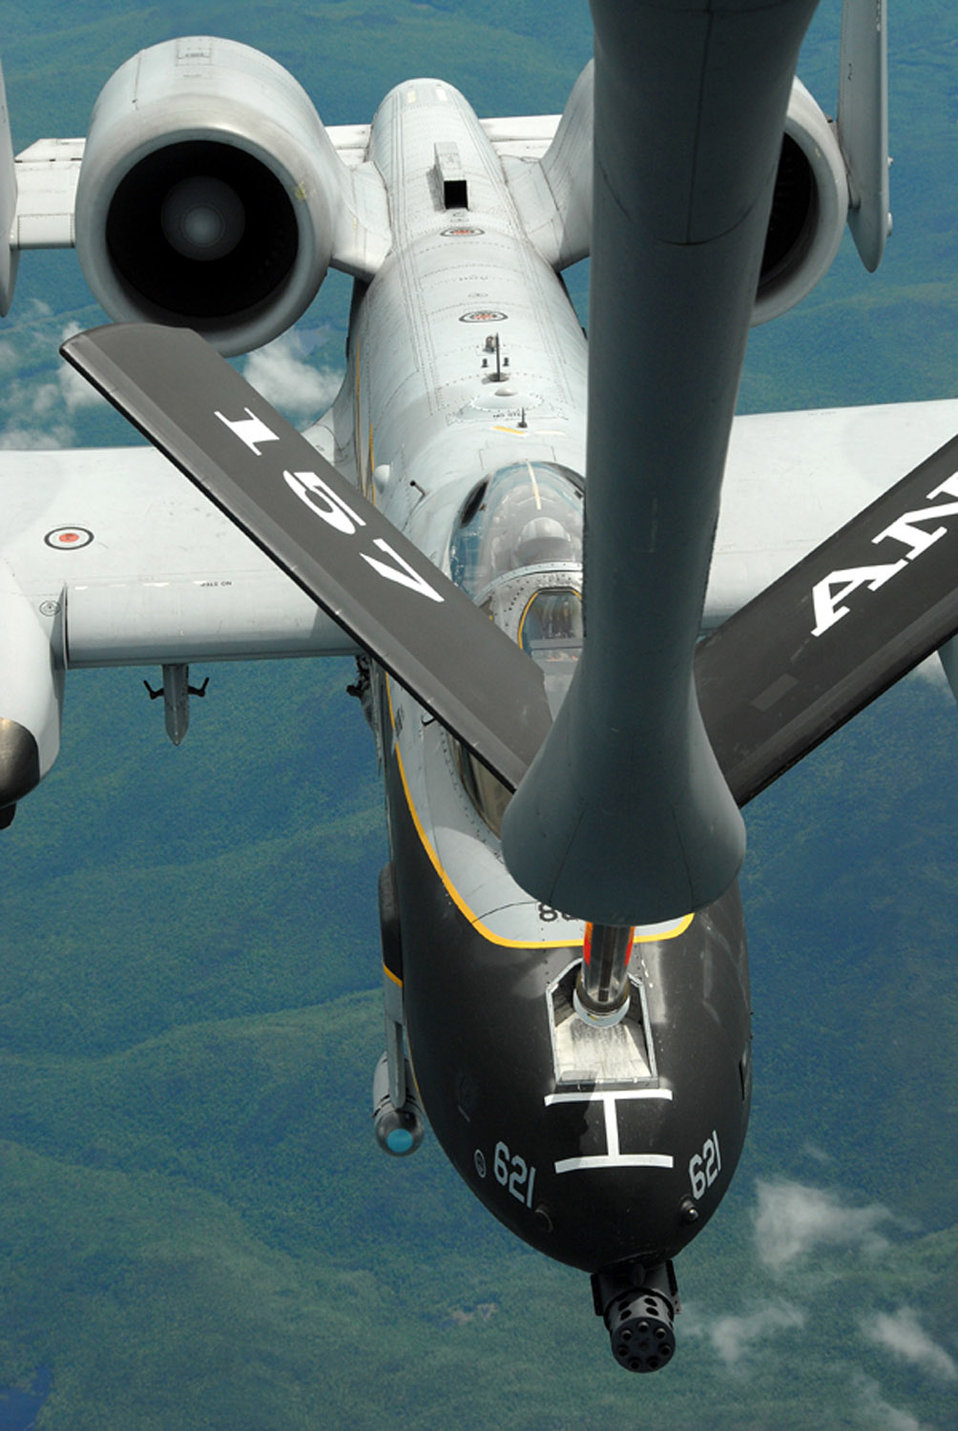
Air Force Week New England kicks off at Pease Air National Guard Base

An A-10 Thunderbolt II from the Connecticut Air National Guard's 103rd Fighter Wing refuels during a special event held June 6 to promote Air Force Week New England which will take place in August.